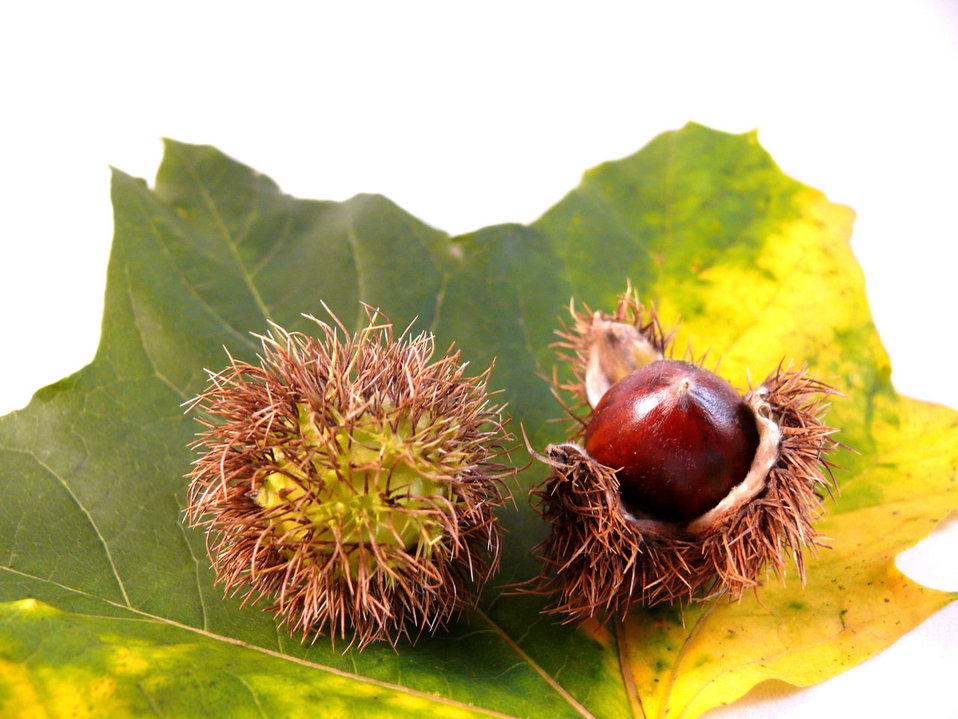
Autumn decoration on white backround.